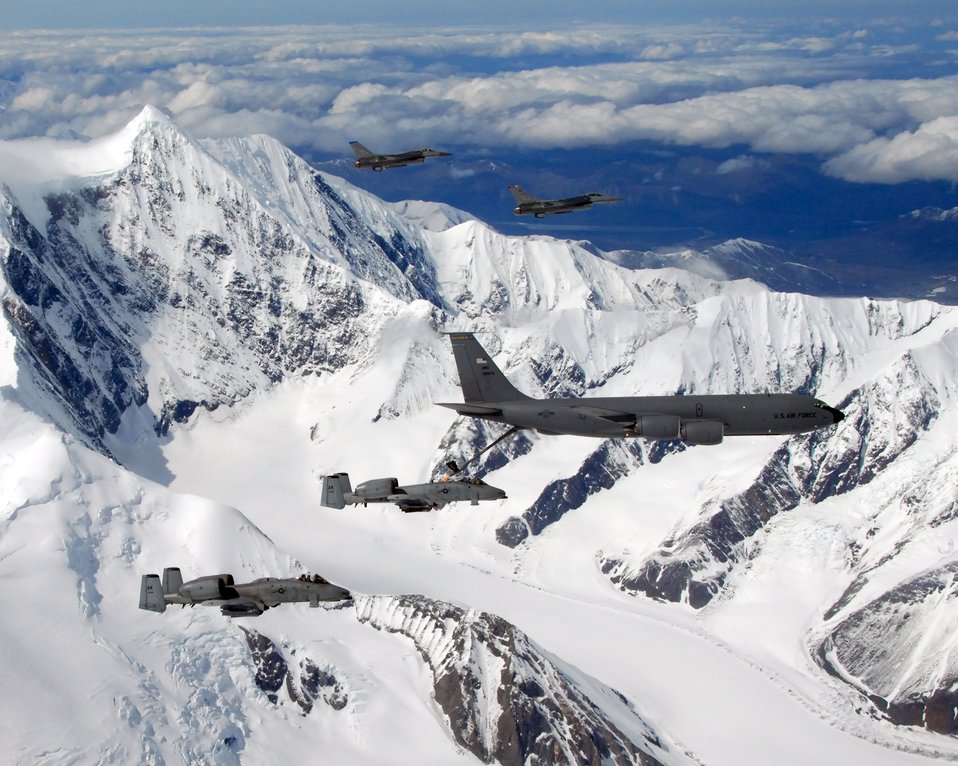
Tanker task force keeps Red Flag flying

A KC-135R Stratotanker flies in formation with two F-16 Fighting Falcons from the 18th Fighter Squadron and two A-10 Wathog IIs from the 355th FS May 29 near Eielson Air Force Base, Alaska. The five aircraft assigned to Eielson AFB flew in formation for the last time due to the deactivation of the 355th FS and the 18th FS. The tanker is assigned to the Alaska Air National Guard's 168th Air Refueling Wing. The KC-135R along with tankers from Grand Forks AFB, N.D., and MacDill AFB, Fla., are providing air refueling support to aircraft for the joint exercise Red Flag-Alaska, lasting through June 8.